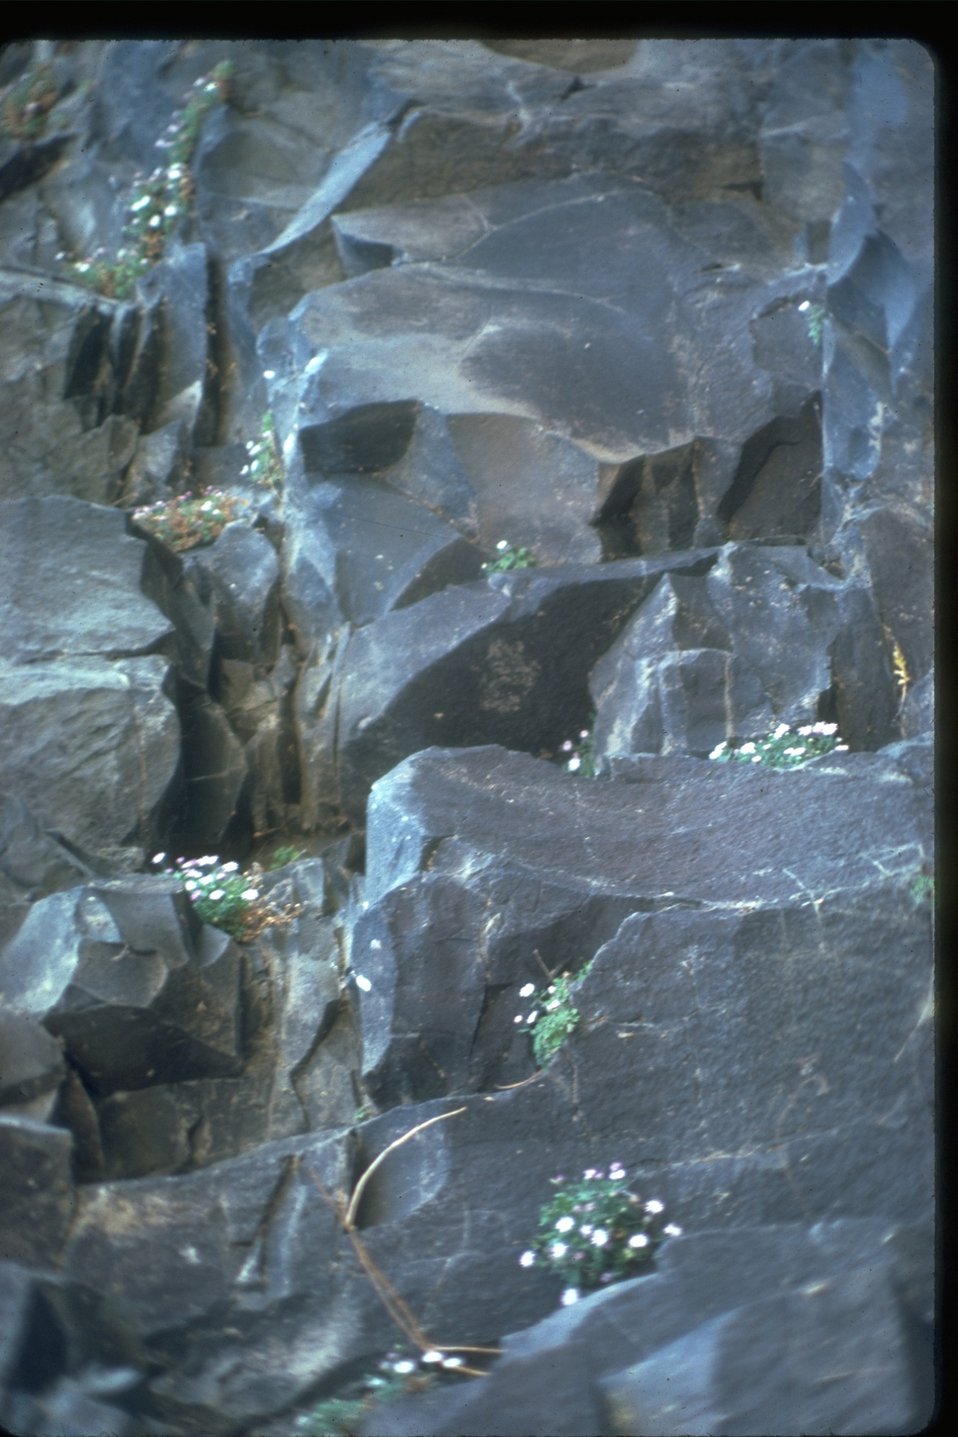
Basalt daisy (Erigeron basalticus), a State-classified threatened plant, grows in the Yakima River Canyon.